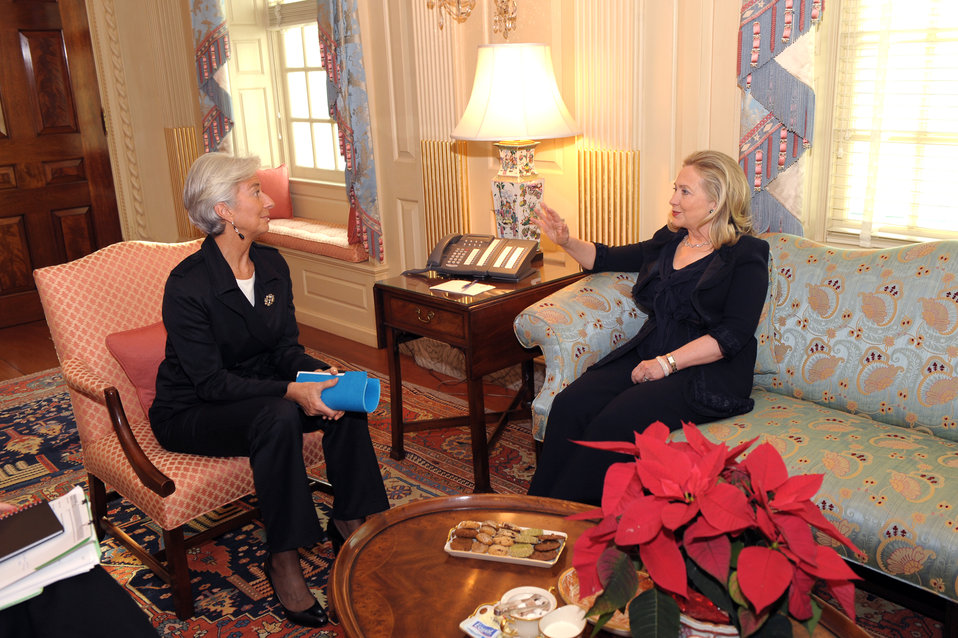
Secretary Clinton Meets With IMF Managing Director Lagarde

U.S. Secretary of State Hillary Rodham Clinton meets with International Monetary Fund (IMF) Managing Director Christine Lagarde, at the U.S. Department of State in Washington, D.C., on December 15, 2011.